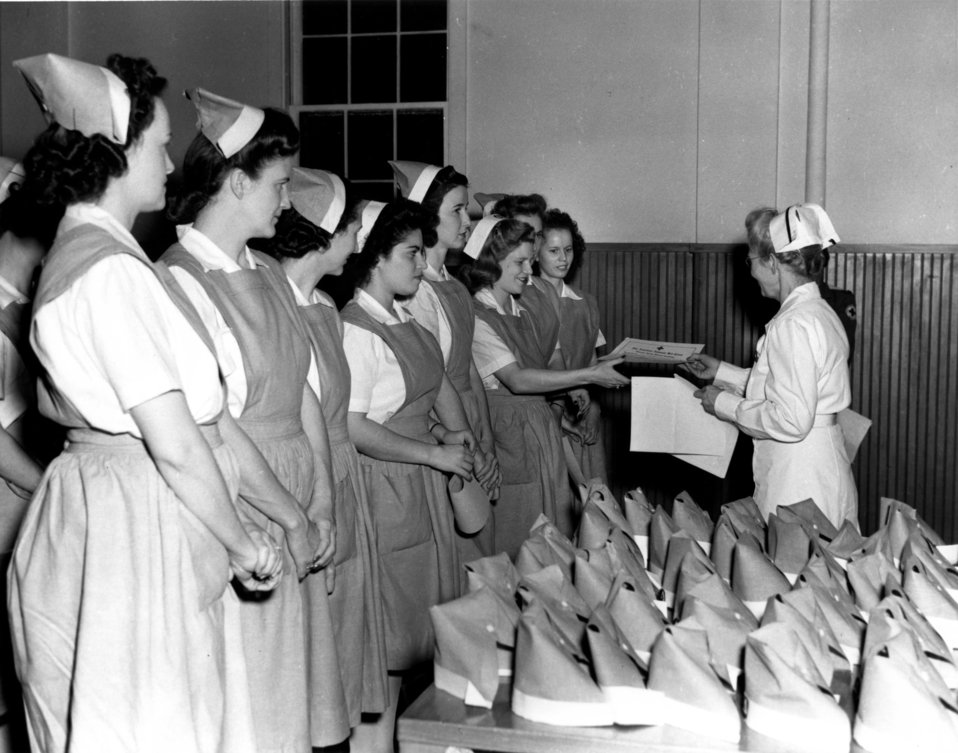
Medical at Oak Ridge